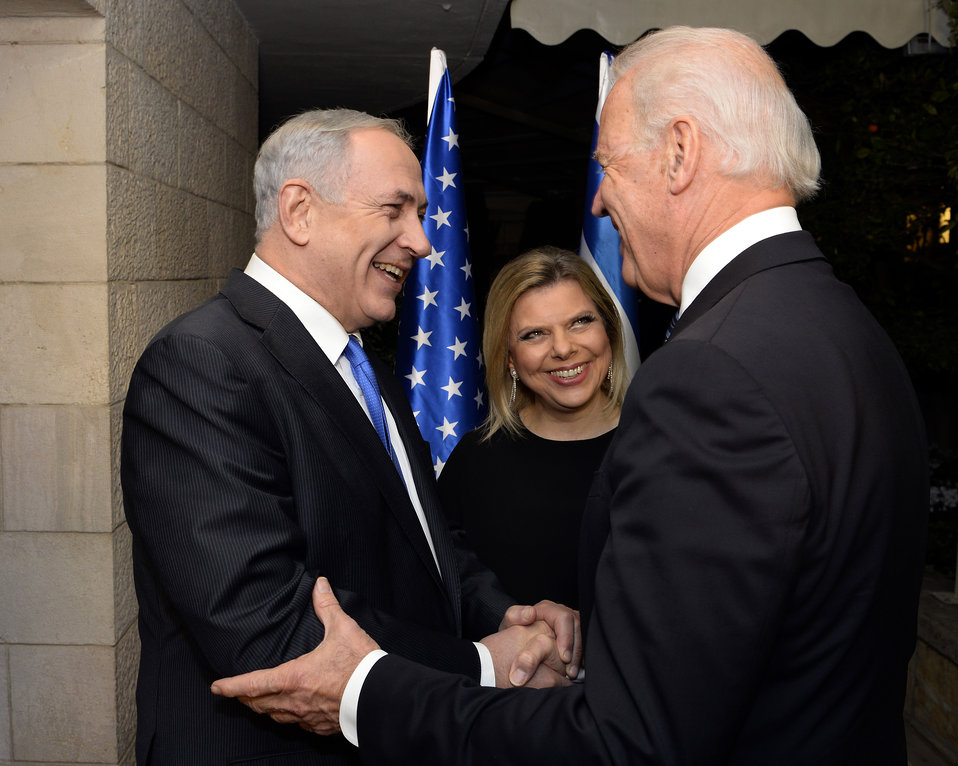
Vice President Biden is Greeted by Israeli Prime Minister Netanyahu

Vice President Joe Biden is greeted by Israeli Prime Minister Benjamin Netanyahu and his wife, Mrs. Sara Netanyahu, upon arrival for his bilateral meeting at the Prime Minister's residence in Jerusalem on January 13, 2013.